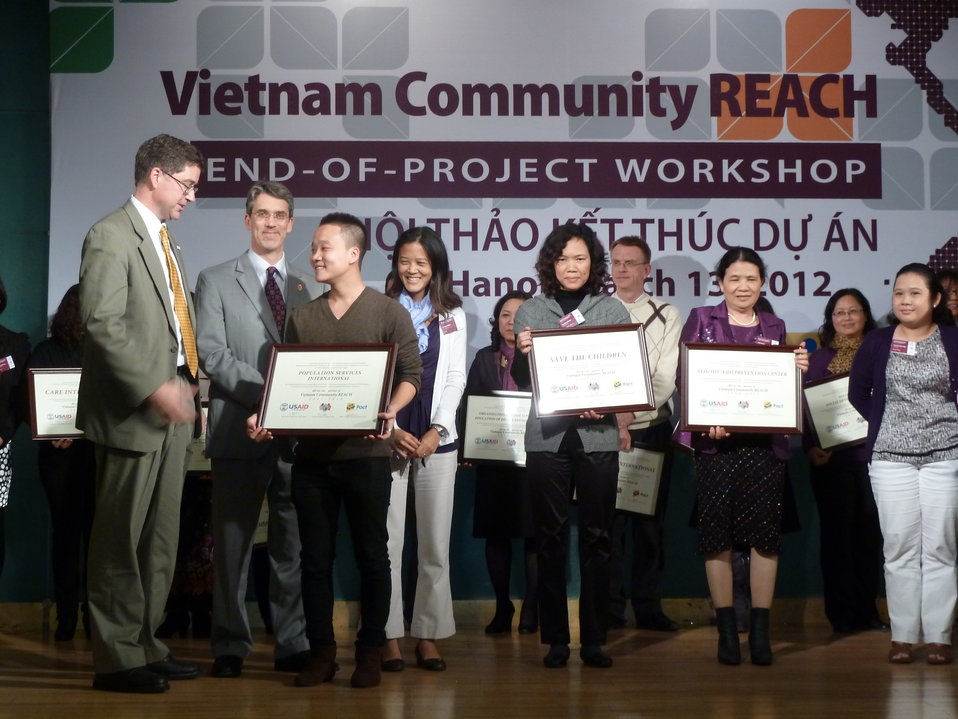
USAID, PEPFAR, and Pact award certificates to local and international partners for their work in addressing HIV in Vietnam

Community REACH project close-out with USAID and implementing partner, Pact